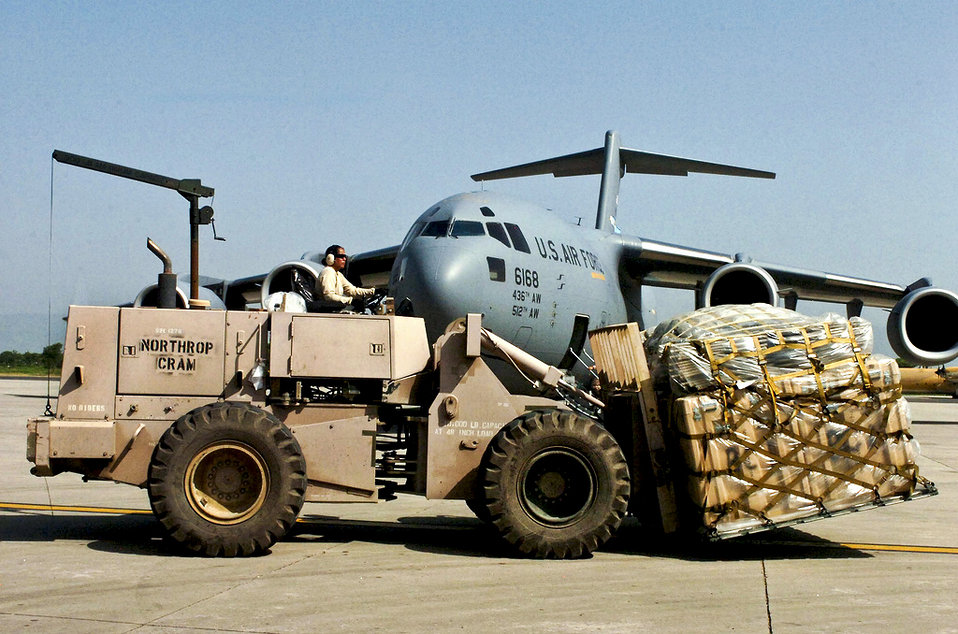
Pakistani relief

An Airman from the 621st Contingency Response Wing transports equipment and supplies past a C-17 Globemaster III on the flightline at Pakistan Air Force Base Chaklala in Rawalpindi, Pakistan, Aug. 29, 2010. About 40 airmen assigned to the 621st CRW are working with Pakistani officials to support humanitarian airlift operations and deliver relief supplies to locations throughout Pakistan.